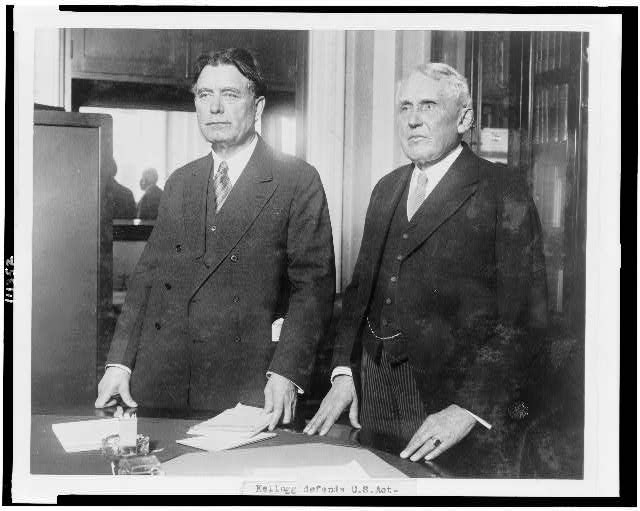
Frank B. Kellogg, right, U.S. Secretary of State 5 March 1925 to 28 March 1929.

Pictured with Senator William E. Borah in the U.S. Senate.

From hdl.loc.gov/loc.pnp/cph.3c11352